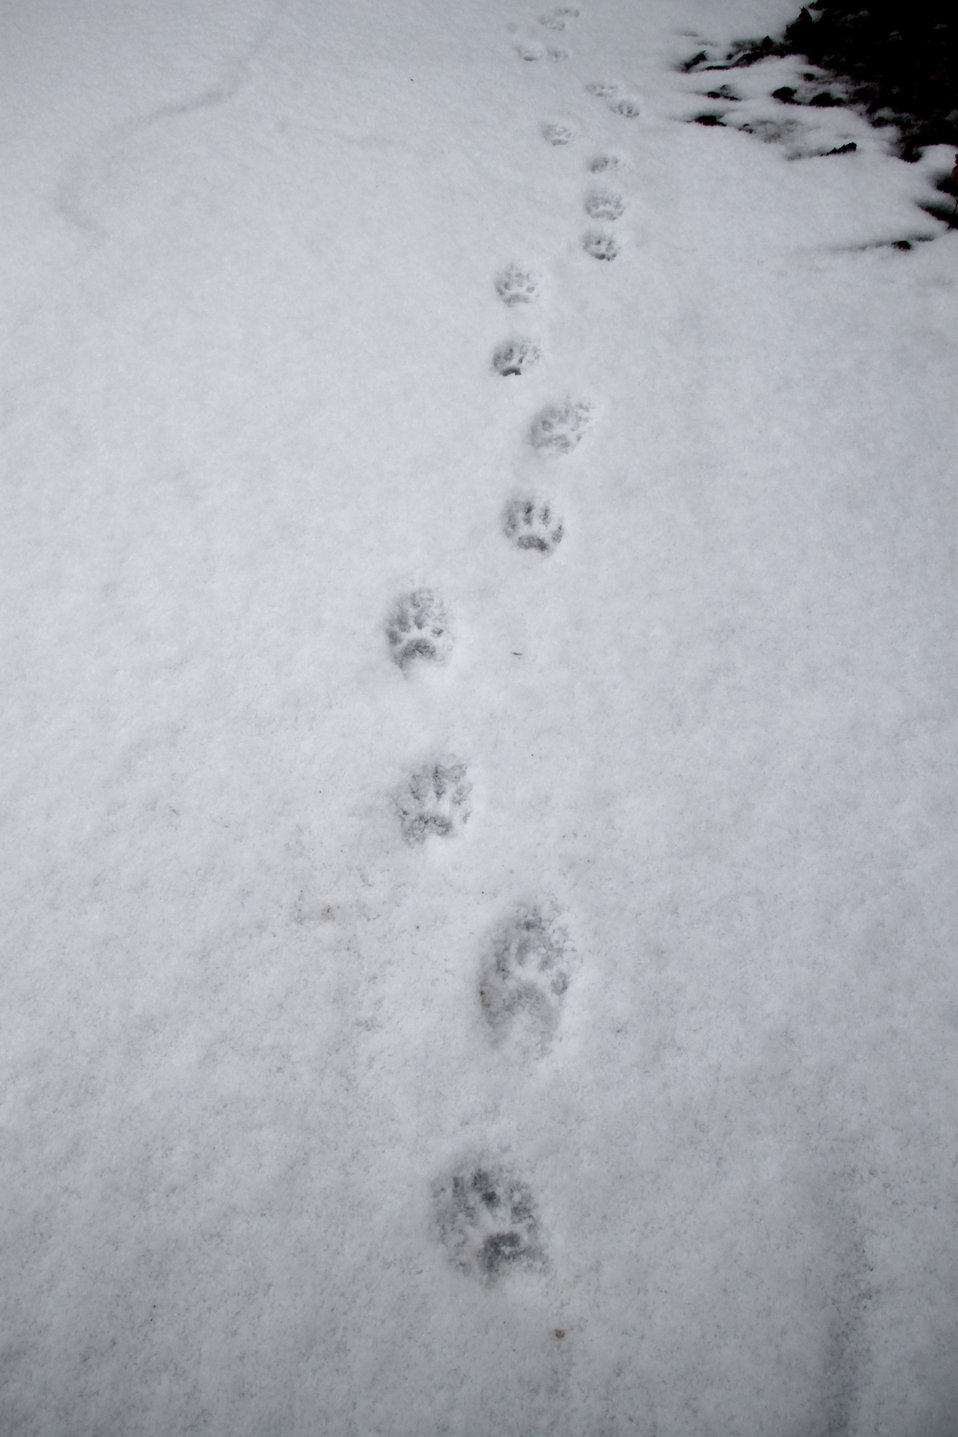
Winter tracks photographed at Missisquoi National Wildlife Refuge.